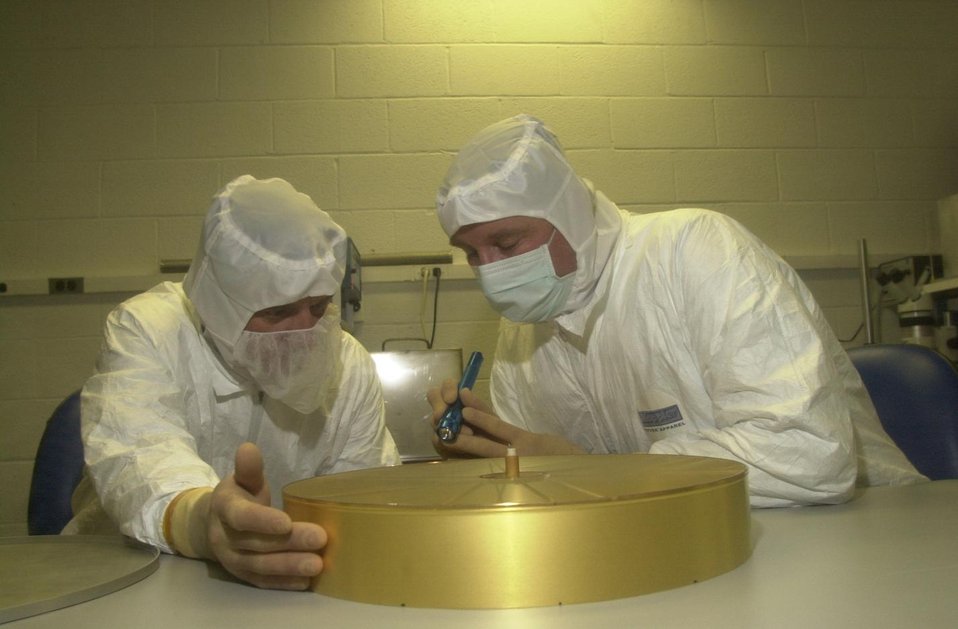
LANL SCIENTISTS PERFORM FINAL CHECK ON ONE OF THE GENESIS SOLAR WIND CONCENTRATOR GRINDS DURING FINAL ASSEMBLY.

THE SOLAR WIND CONCENTRATOR, ION MONITOR AND ELECTRON MONITOR WERE DESIGNED AND BUILT BY A TEAM OF SCIENTISTS AND ENGINEERS AT LOS ALAMOS NATIONAL LAB FOR THE GENESIS SPACECRAFT. THE SOLAR WIND CONCENTRATOR IS DESIGNED TO COLLECT A HIGH CONCENTRATION OF OXYGEN AND RETURN THE SAMPLE TO EARTH FOR ANALYSIS. THE ION AND ELECTRON MONITORS INSTANTANEOUSLY DETERMINE WHICH TYPE OF SOLAR WIND IS PASSING THE SPACECRAFT AND TRANSLATE THE KNOWLEDGE INTO ACTIONS FOR THE SOLAR WIND CONCENTRATOR AND SOLAR WIND COLLECTOR ARRAYS.